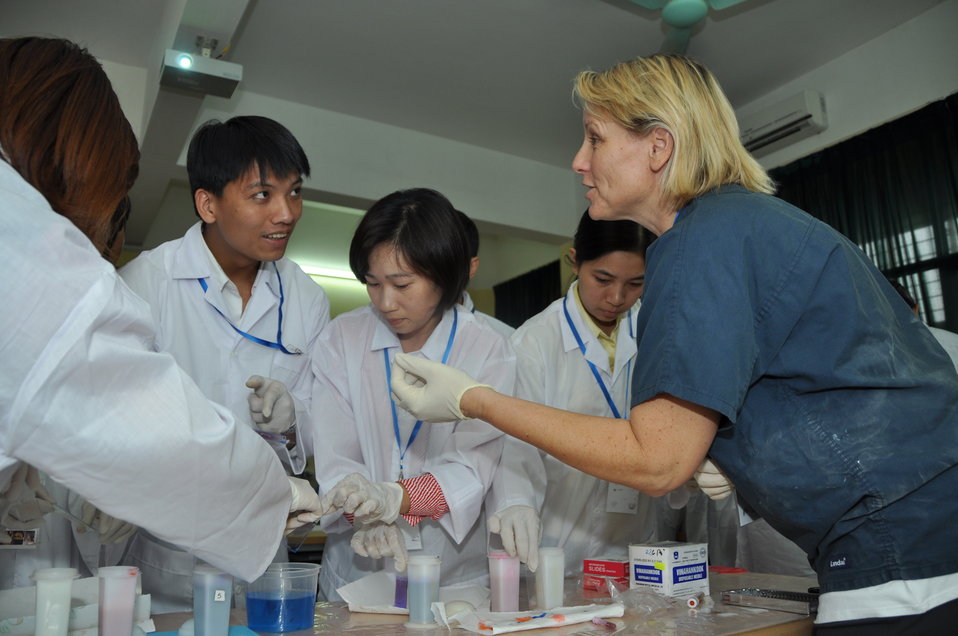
USAID EPT Smithsonian Pathology Training to Detect Emerging Infectious Diseases Wildlife and Other Animals in Vietnam Workshop